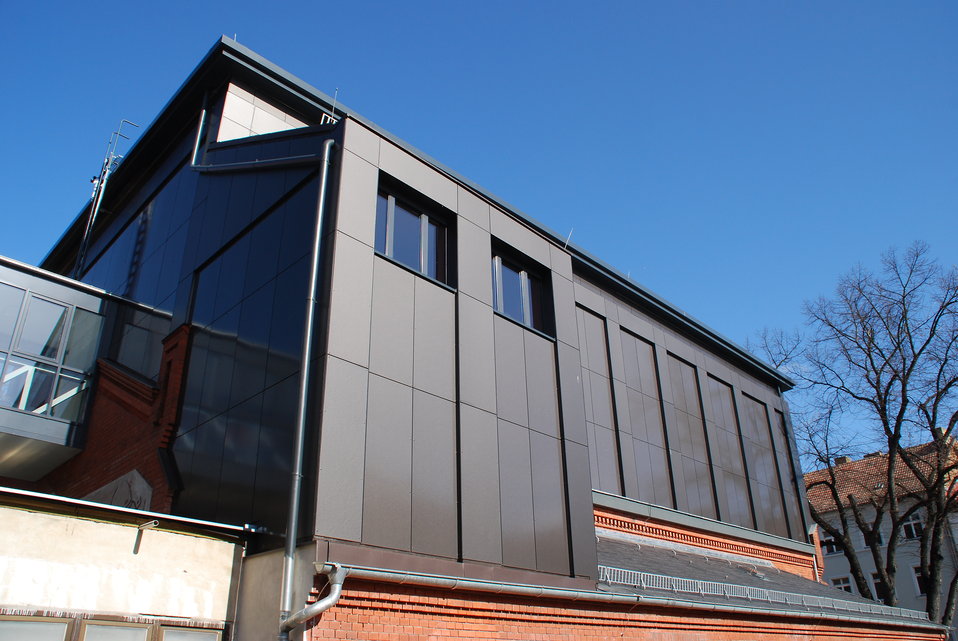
Abriss Bahnhofstunnel Frankfurt (Oder) Ehemaliges Friedrichsgymnasium Turnhalle um ein Stockwerk aufgestockt